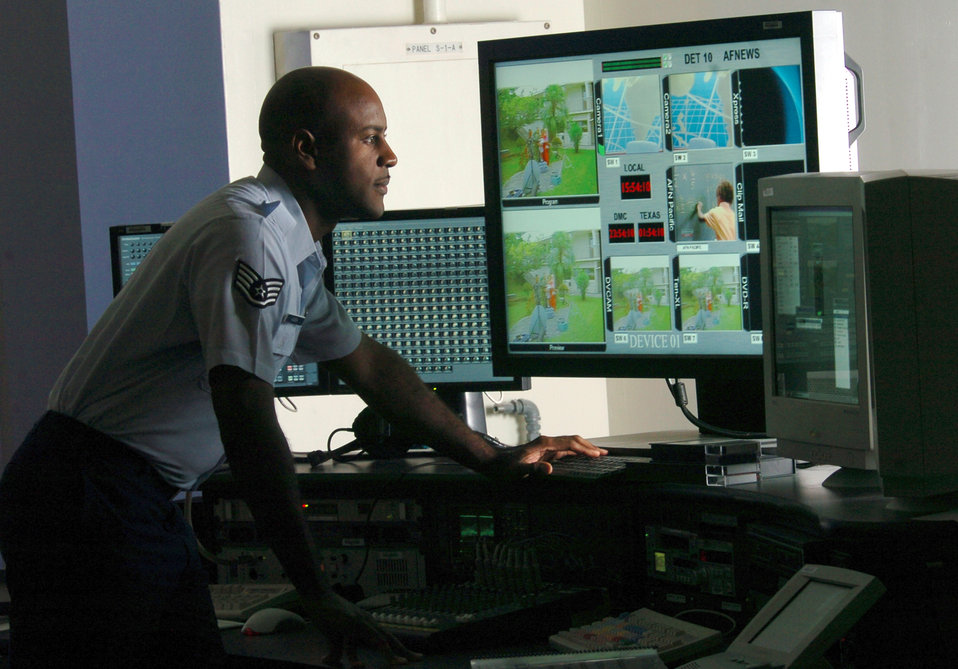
Behind the news scene

YOKOTA AIR BASE, Japan -- Staff Sgt. Norris Agnew uses digital-editing equipment to prepare a nightly